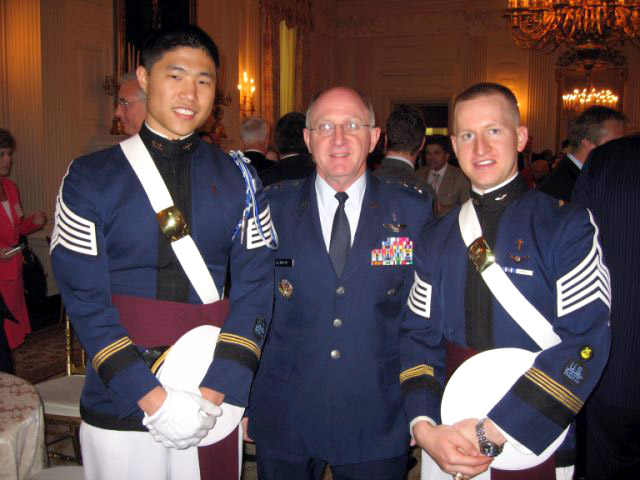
Virginia Tech cadets participate in National Day of Prayer

Virginia Tech Cadets James Compton (left) and Houston Yu meet Chaplain (Maj.) Gen.) Charles C. Baldwin, chaplain of the Air Force May 3 in Washington, D.C. Cadet Yu, the regimental chaplain, and Cadet Compton, the chaplain for the highty-tighties, were invited guests of the National Day of Prayer. The cadets are members of the Virginia Tech Air Force ROTC.